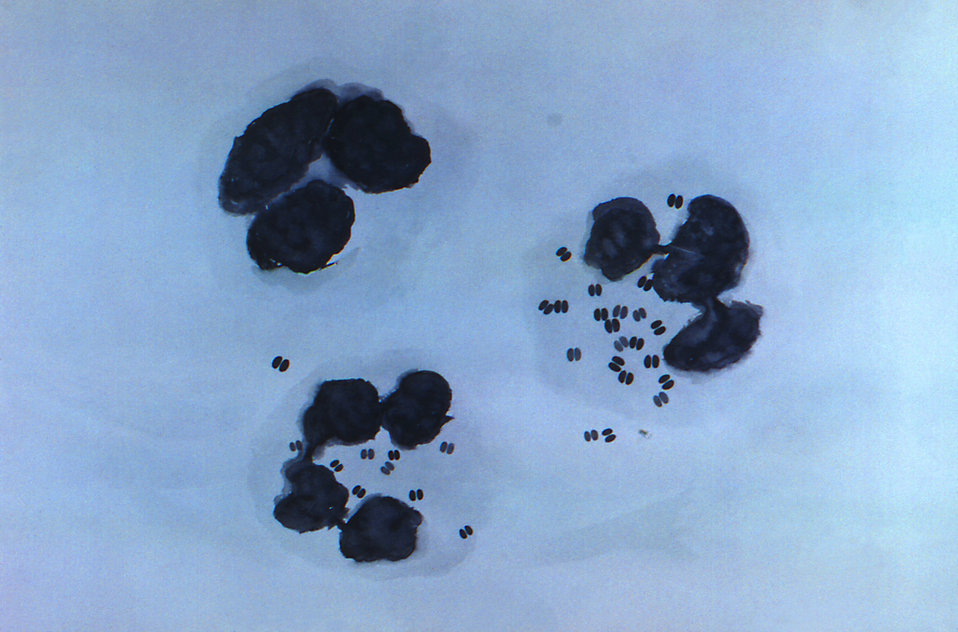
This illustration depicts a Gram-stain of a urethral exudate that is diagnostic of gonococcal urethritis.